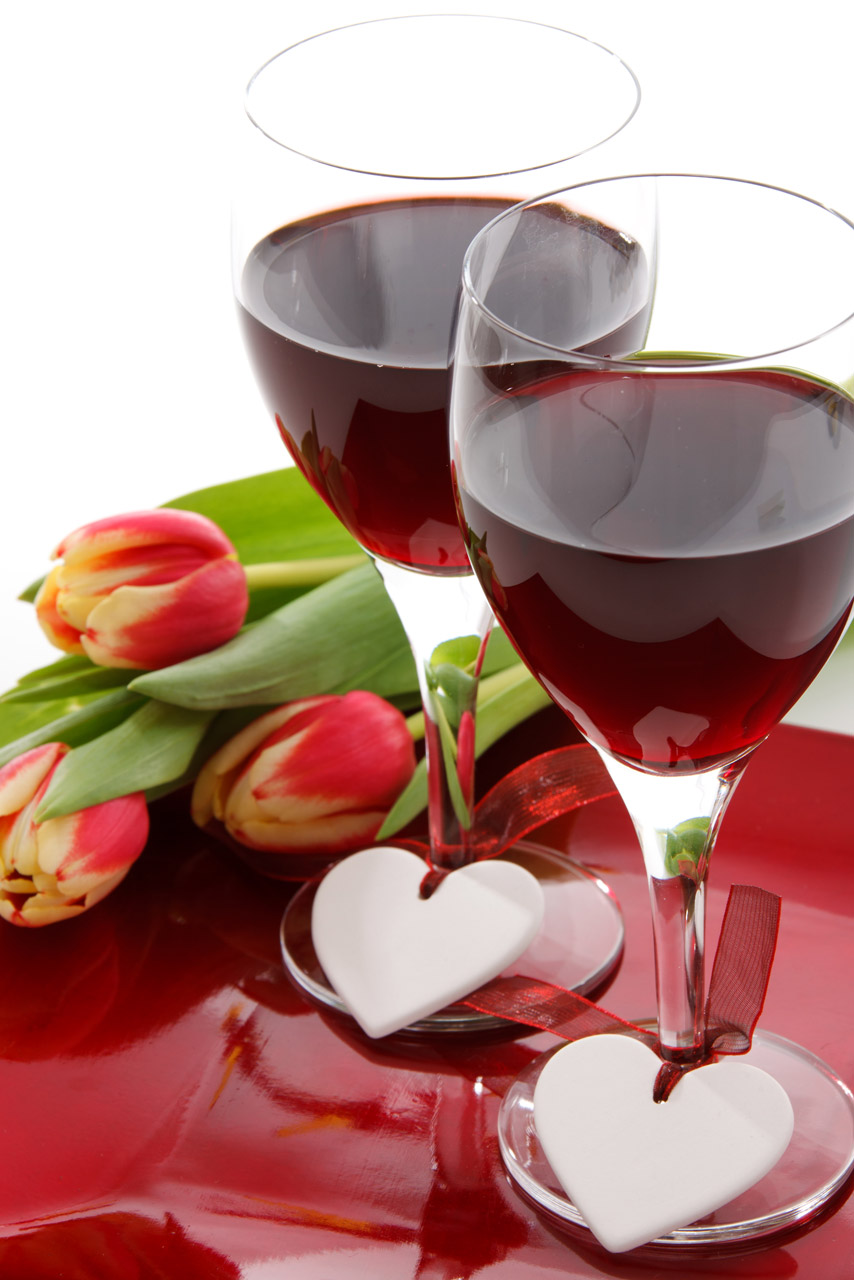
Two glasses of wine with heart decoration and tulips on white background.